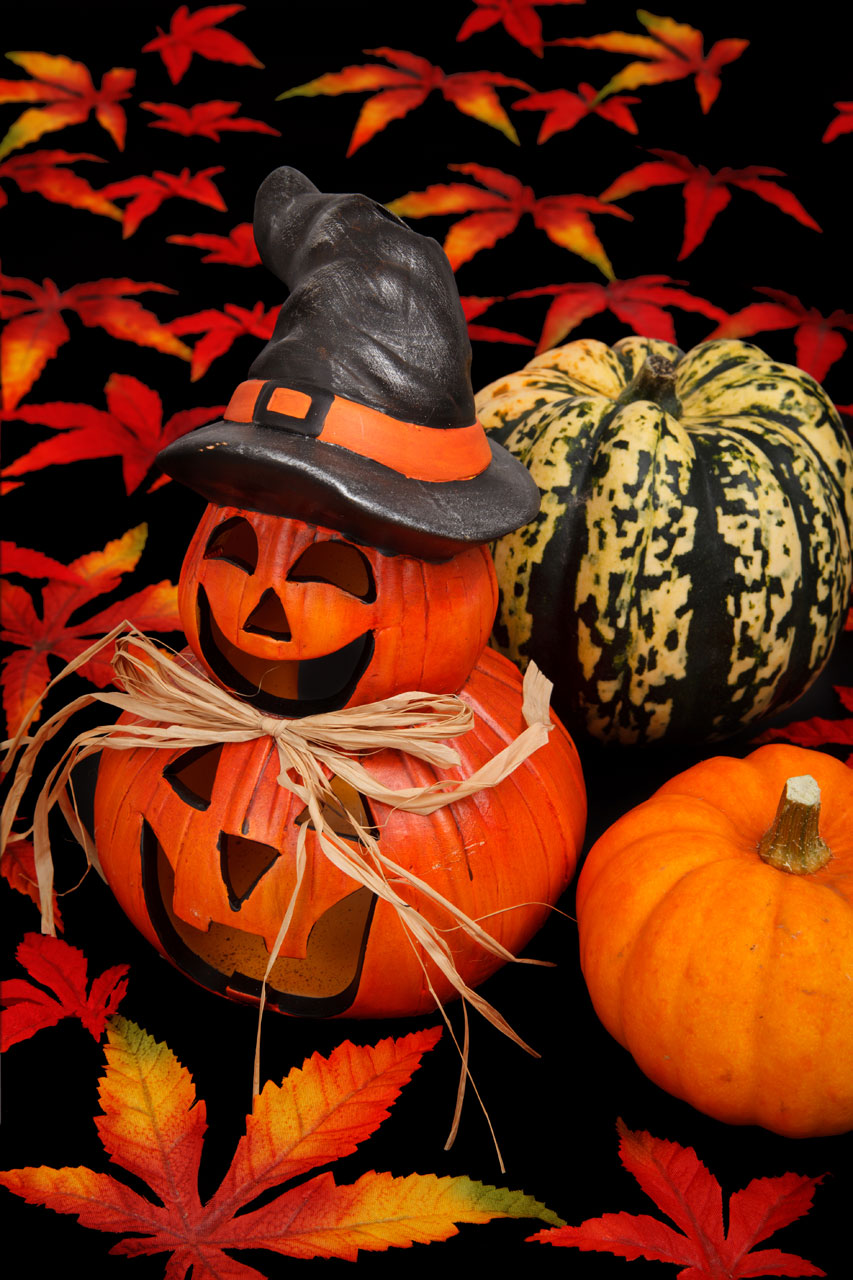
Halloween decoration on black

Halloween pumpkin decoration with autumn leaves on black background.